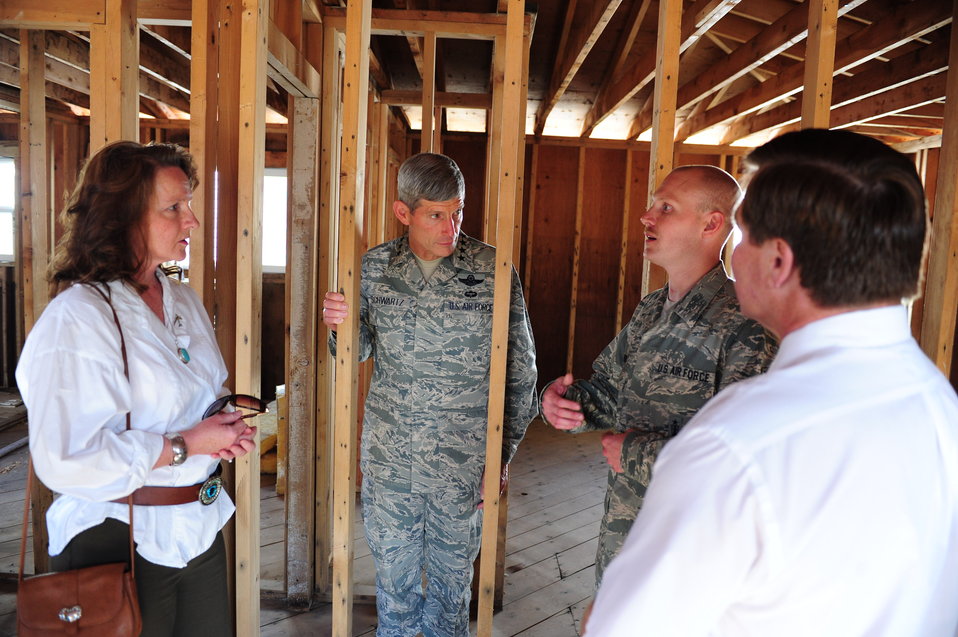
CSAF visits Minot AFB

Tech. Sgt. Robert Horn briefs Air Force Chief of Staff Gen. Norton Schwartz and local civic leaders Oct. 4, 2011, in Minot N.D., during a visit to Horn's flood-ravaged home. Schwartz visited the Horn family to see the flood areas in Minot and how the Airmen are recovering. Horn is an ICBM weapon system controller assigned to the 91st Operation Support Squadron.